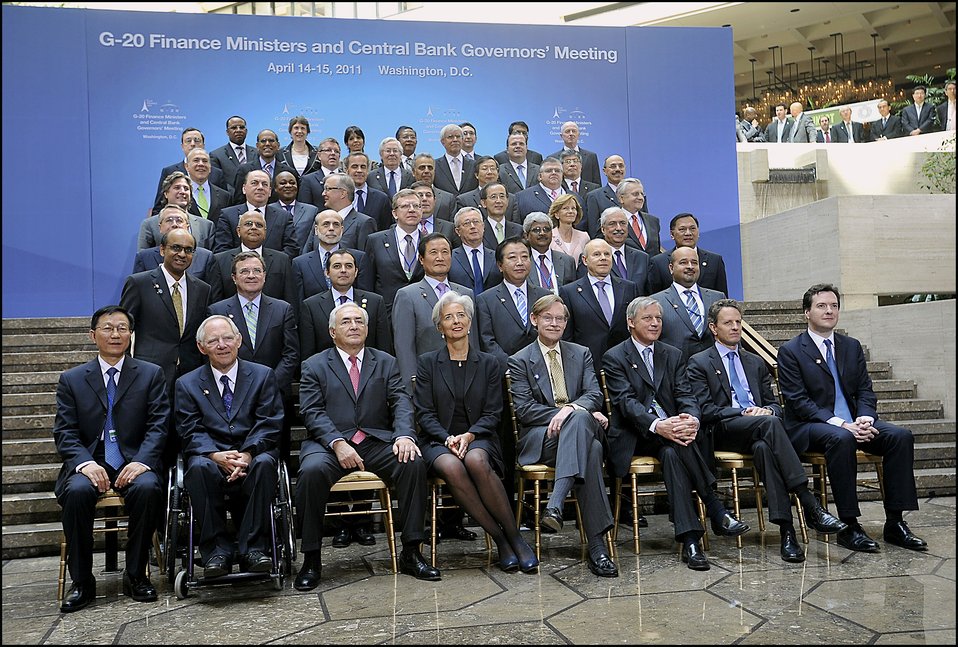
G-20 Finance Ministers and Central Bank Governors' Meeting

Family photo at the G20 meeting of finance ministers and central bank governors at the International Monetary Fund (IMF) held in Washington, DC.